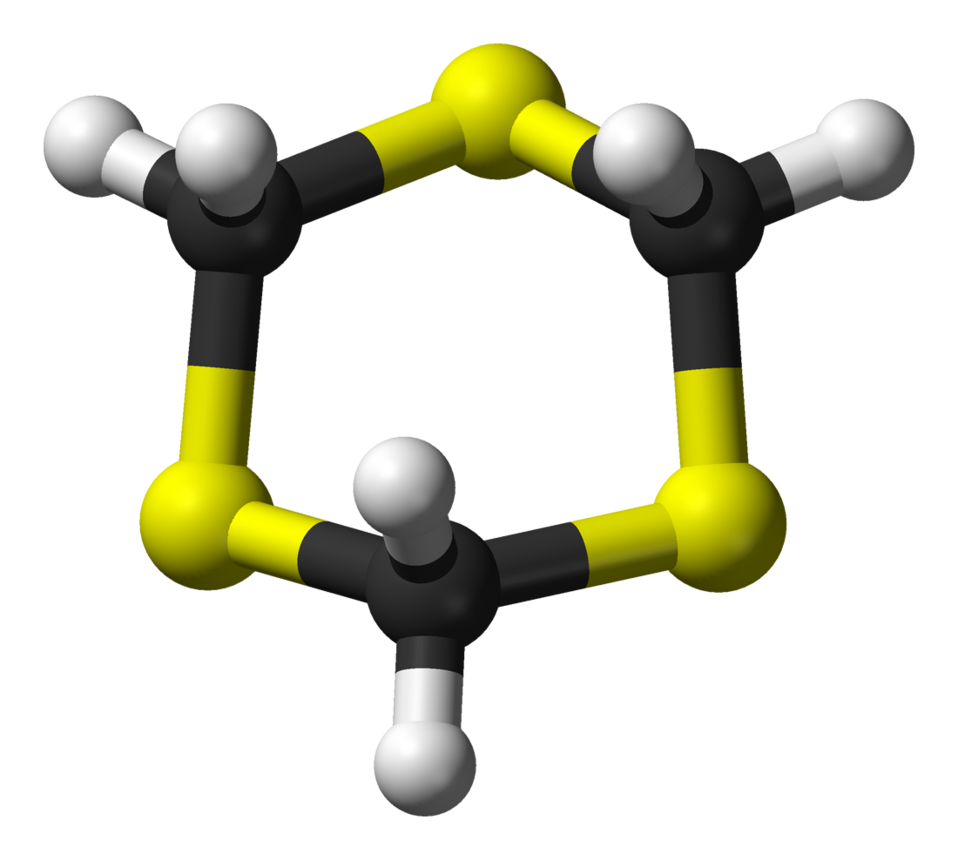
Ball-and-stick model of the 1,3,5-trithiane molecule, C3H6S3. X-ray crystallographic data from G. Valle, V. Busetti, M. Mammi and G. Carazzolo (August 1969). 'The crystal structure of 1,3,5-trithiane: a refinement'. Acta Cryst. 'B25' (8): 1432-1436. DOI:10.1107/S0567740869004171.